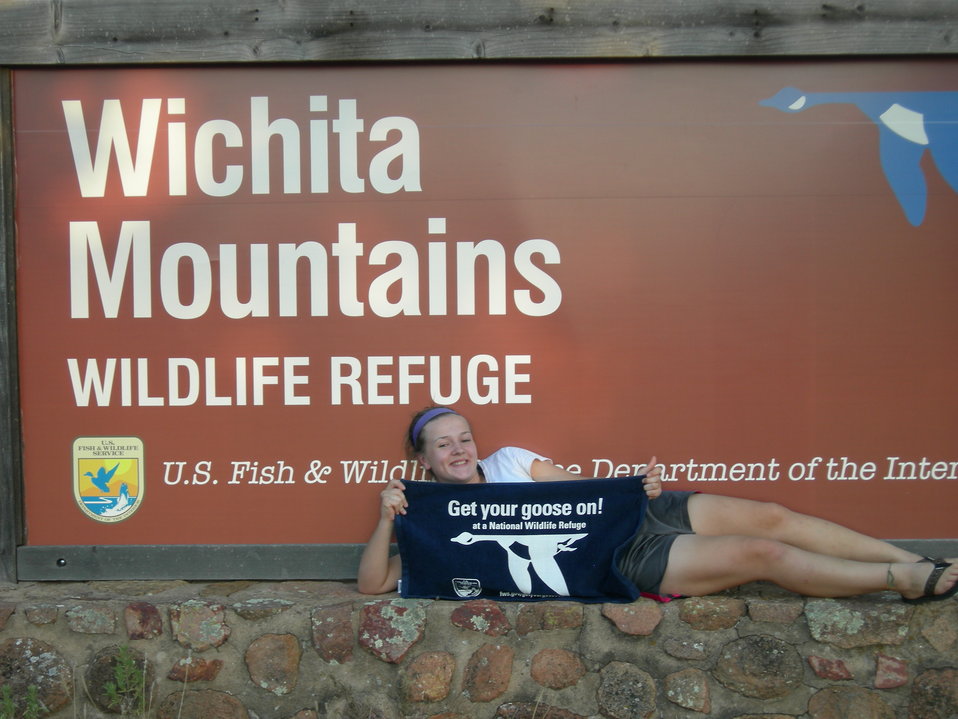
Get Your Goose On!

Wichita Mountains National Wildlife Refuge in Oklahoma.